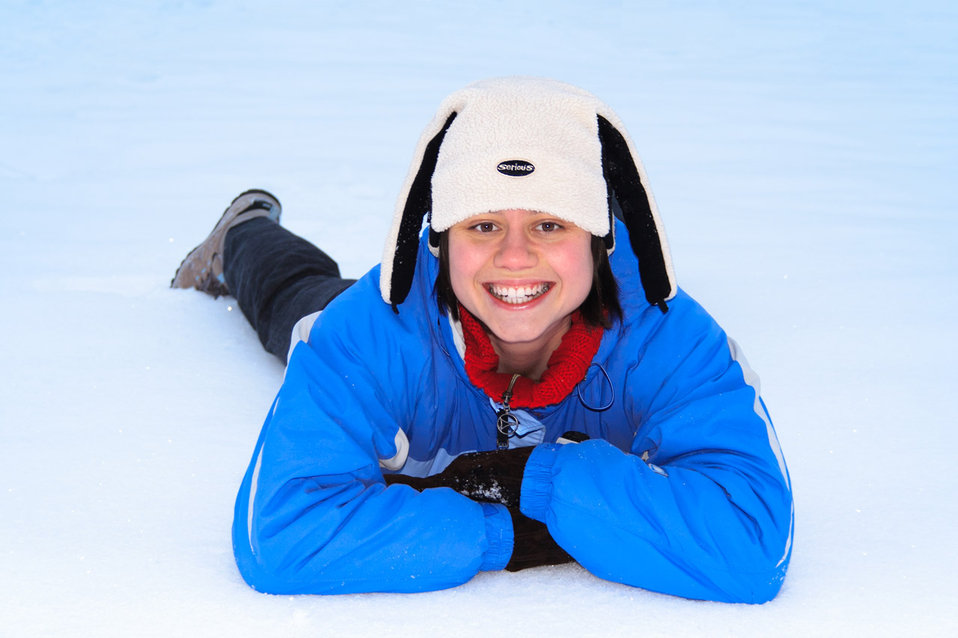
Girl lying in snow

Young woman lying in snow and smiling.